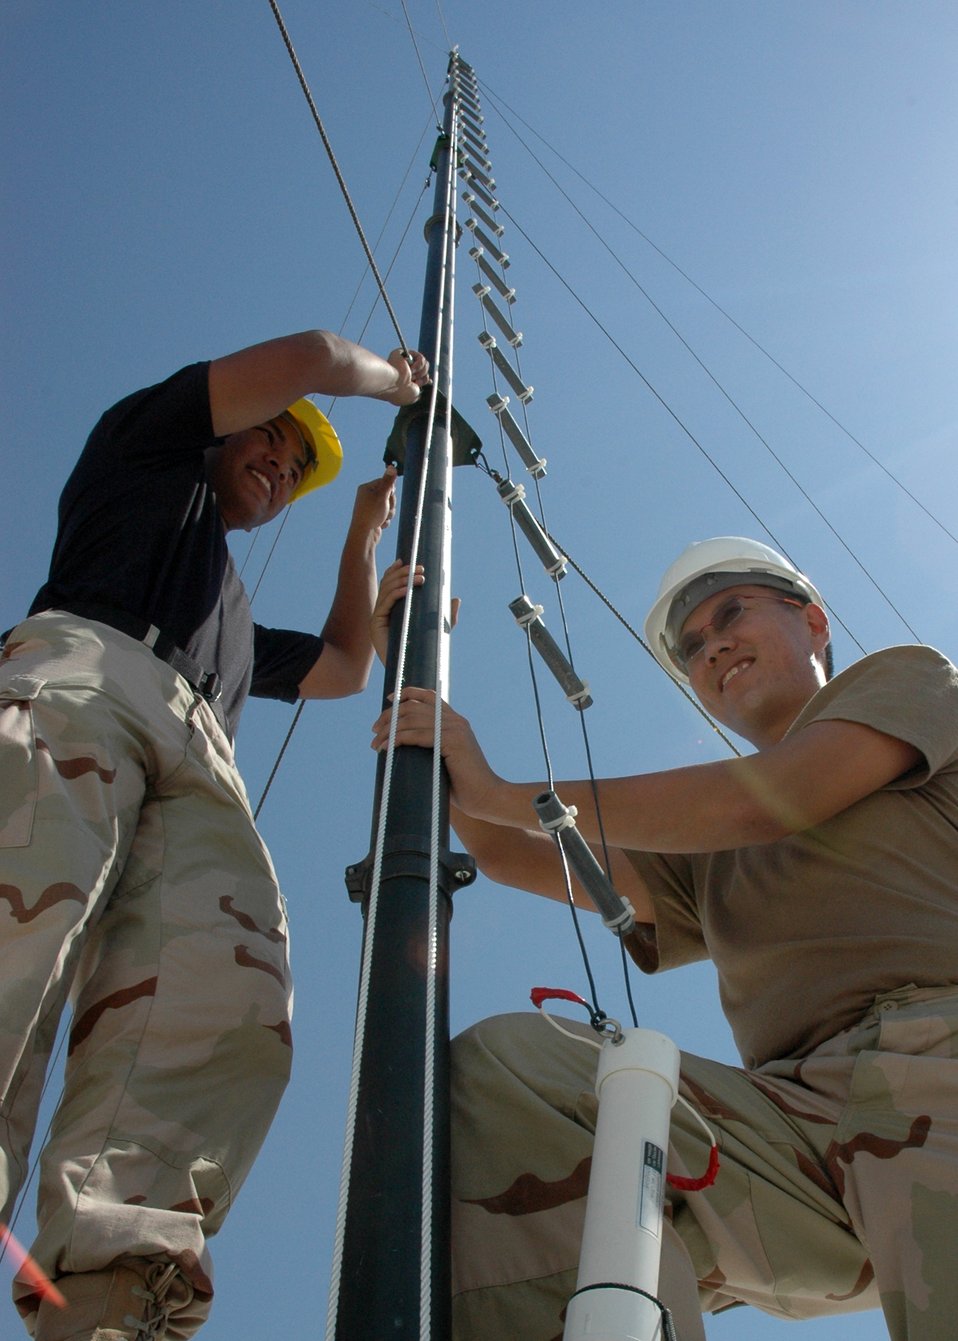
Feel the tension

Airman 1st Class Savuth Touch, 379th Expeditionary Communications Squadron, and Sergeant Barry Lim, a Singaporean communications specialist, check tension on guide wires while installing a new antenna.